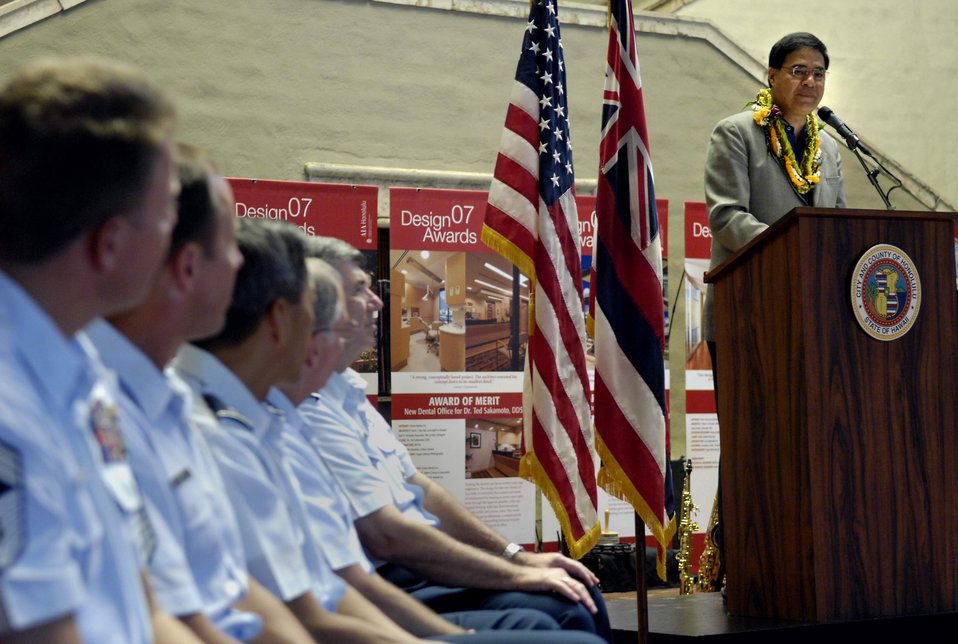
Air Force Week Honolulu kicks off

Mayor Mufi Hannemann delivers his Air Force Week proclamation speech Sept. 9 at the Honolulu Hale in Hawaii. Mr. Hannemann, mayor for the city and county of Honolulu, Hawaii proclaimed Sept. 7 through 15 as Air Force Week in Honolulu.